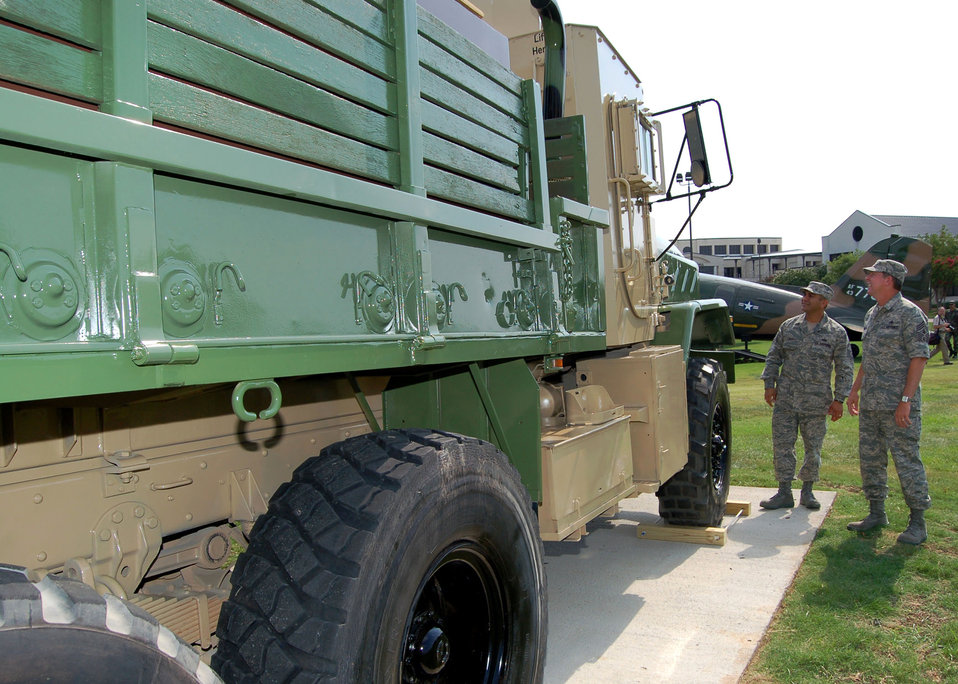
Dedication recognizes Airmen who deliver under fire

Chief Master Sgt. of the Air Force Rodney J. McKinley and his assistant, Senior Master Sgt. Jerry Tapia, inspect a convoy gun truck shortly before it was dedicated as a static display at the Air Force Enlisted Heritage Hall July 23 at Maxwell Air Force Base's Gunter Annex, Ala.